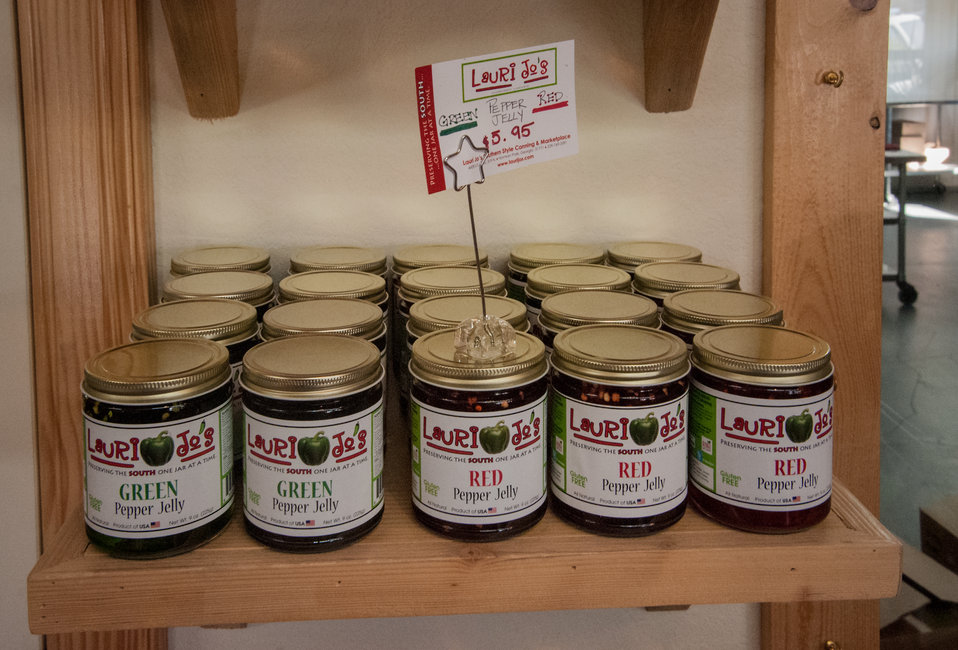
Jars of Red Pepper Jelly sit on the shelf at Laurie Jo’s Southern Style Canning business in Norman Park, Colquitt County, GA on Mar. 7, 2013. The business has increased its production to 12 items that now includes pickled green tomatoes, pickled okra, pickled asparagus pickled green beans, red and green pepper jellies, pineapple pepper jelly salsa and pepper sauce. Consumers may now purchase Lauri Jo’s Southern Style Canning Line in Whole Foods, Earth Fare and Kroger stores across 20 states. Lauri Jo Bennett applied for a U.S. Department of Agriculture (USDA) Rural Development (RD) Rural Business Enterprise Grant (RBEG) to help market her products. The grant from USDA has enable Lauri Jo to employ 26 people. The USDA Strike Force Initiative has designated Colquitt County, GA as a Strike Force county selected to receive assistance to relieve persistent poverty in historically high-poverty counties.